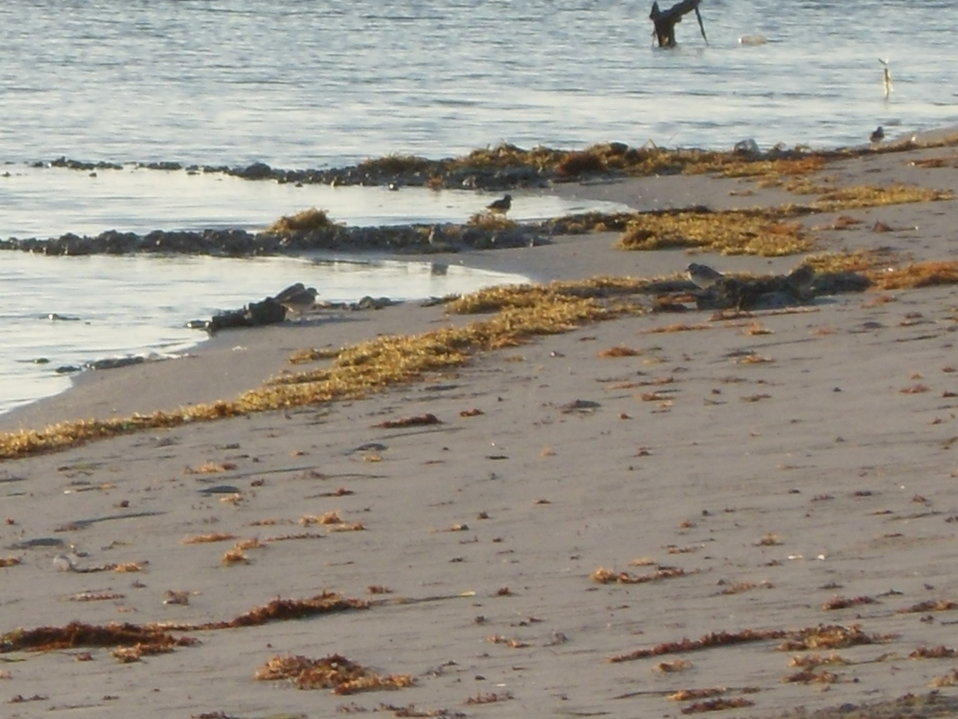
Piping plover flock on Great Inagua Island